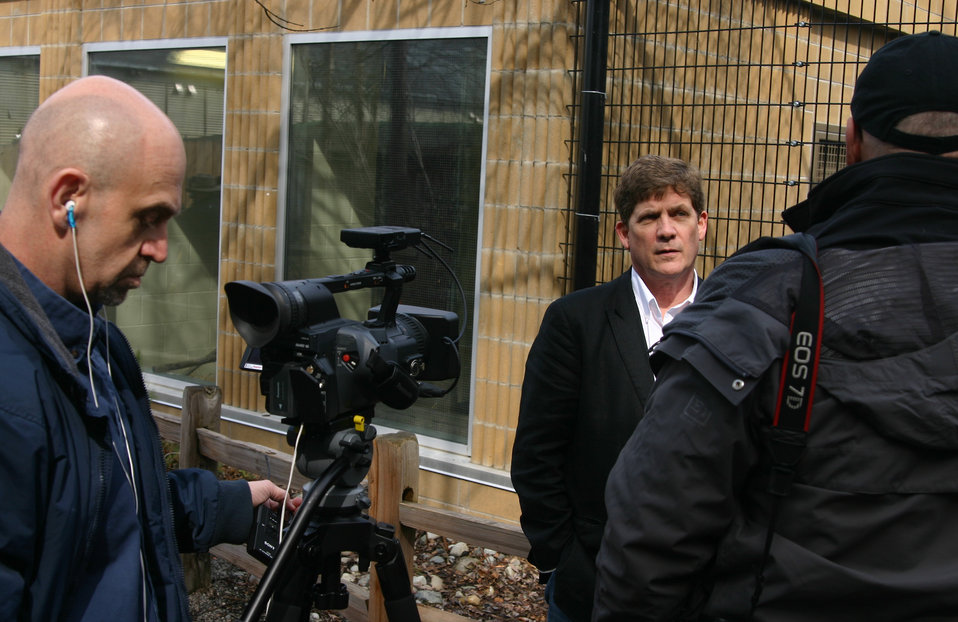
FWS Regional Director interview 01

Kali at the Alaska Zoo with FWS Regional Director Geoffrey Haskett being interviewed by media.